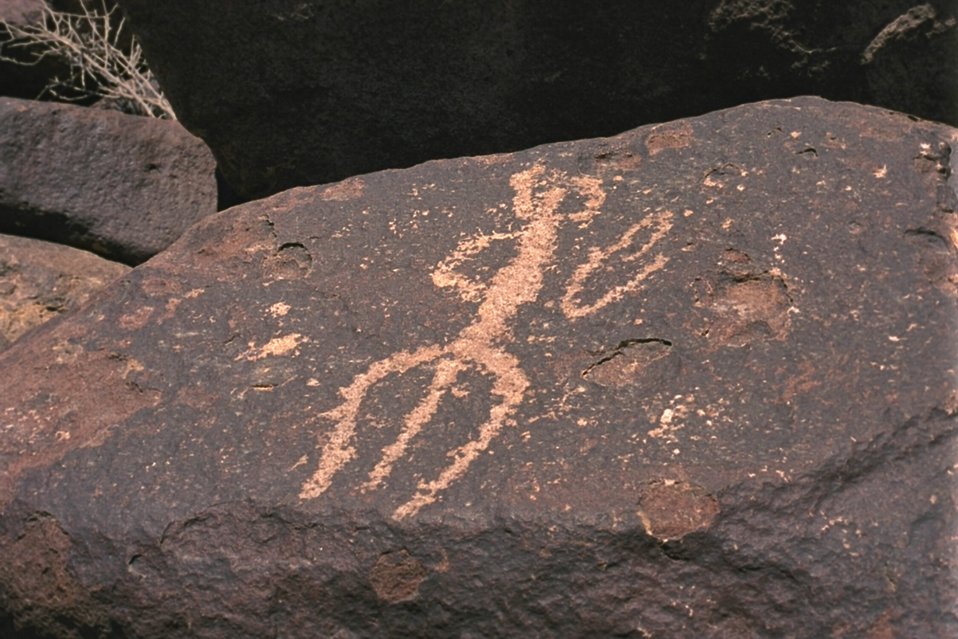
A close up of a Petrogylph at the Cocoraque Butte Archaeological Distric in the Ironwood Foreset National Monument.